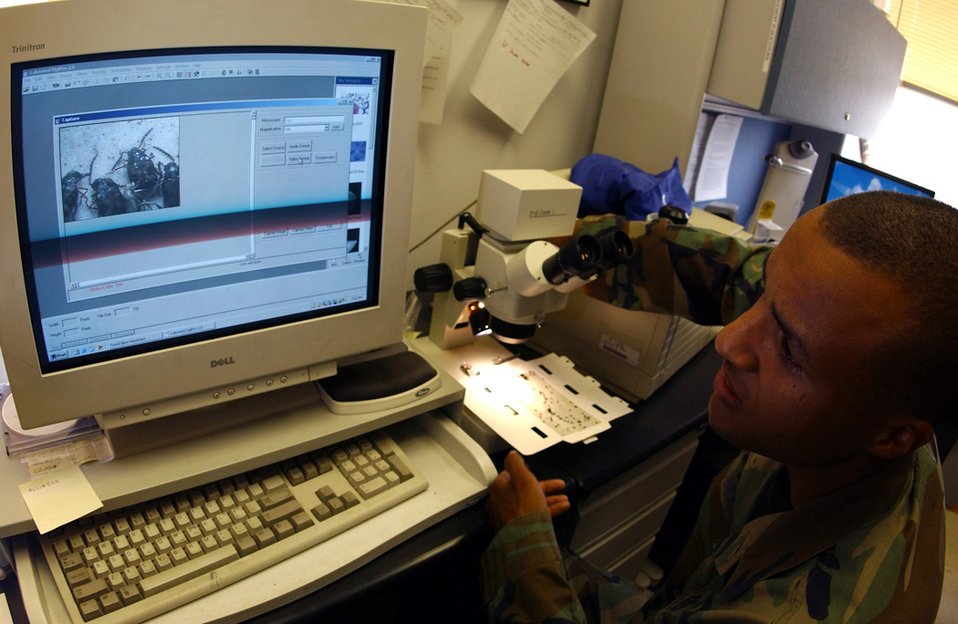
Bugging out

EIELSON AIR FORCE BASE, Alaska -- Staff Sgt. Christopher Beach uses a computer-driven microscope to inspect insects here June 28. Airmen from the 354th Civil Engineer Squadron's pest management section Airmen use biological, mechanical and cultural methods to deter and catch pests around base.